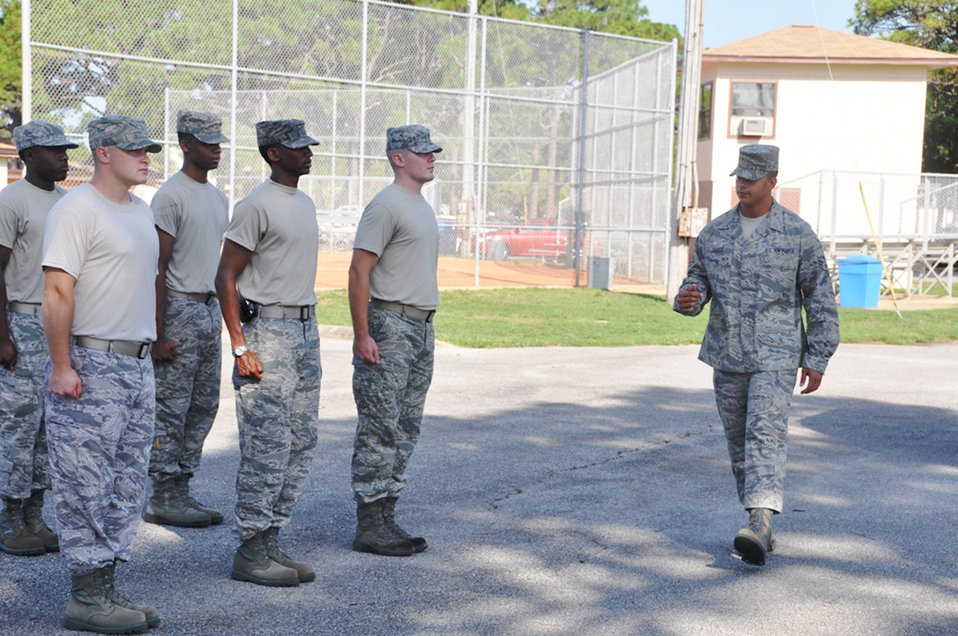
USAF Honor Guard visits Tyndall AFB

Airman 1st Class Justin Baker calls basic commands to Tyndall Air Force Base Honor Guard Airmen to practice for active-duty funeral ceremonies July 21, 2010, at Tyndall AFB, Fla. Airmen participated in a week-long training course to improve their skill and give them the ability to teach others. Airman Baker is a visiting United States Air Force Honor Guard instructor.